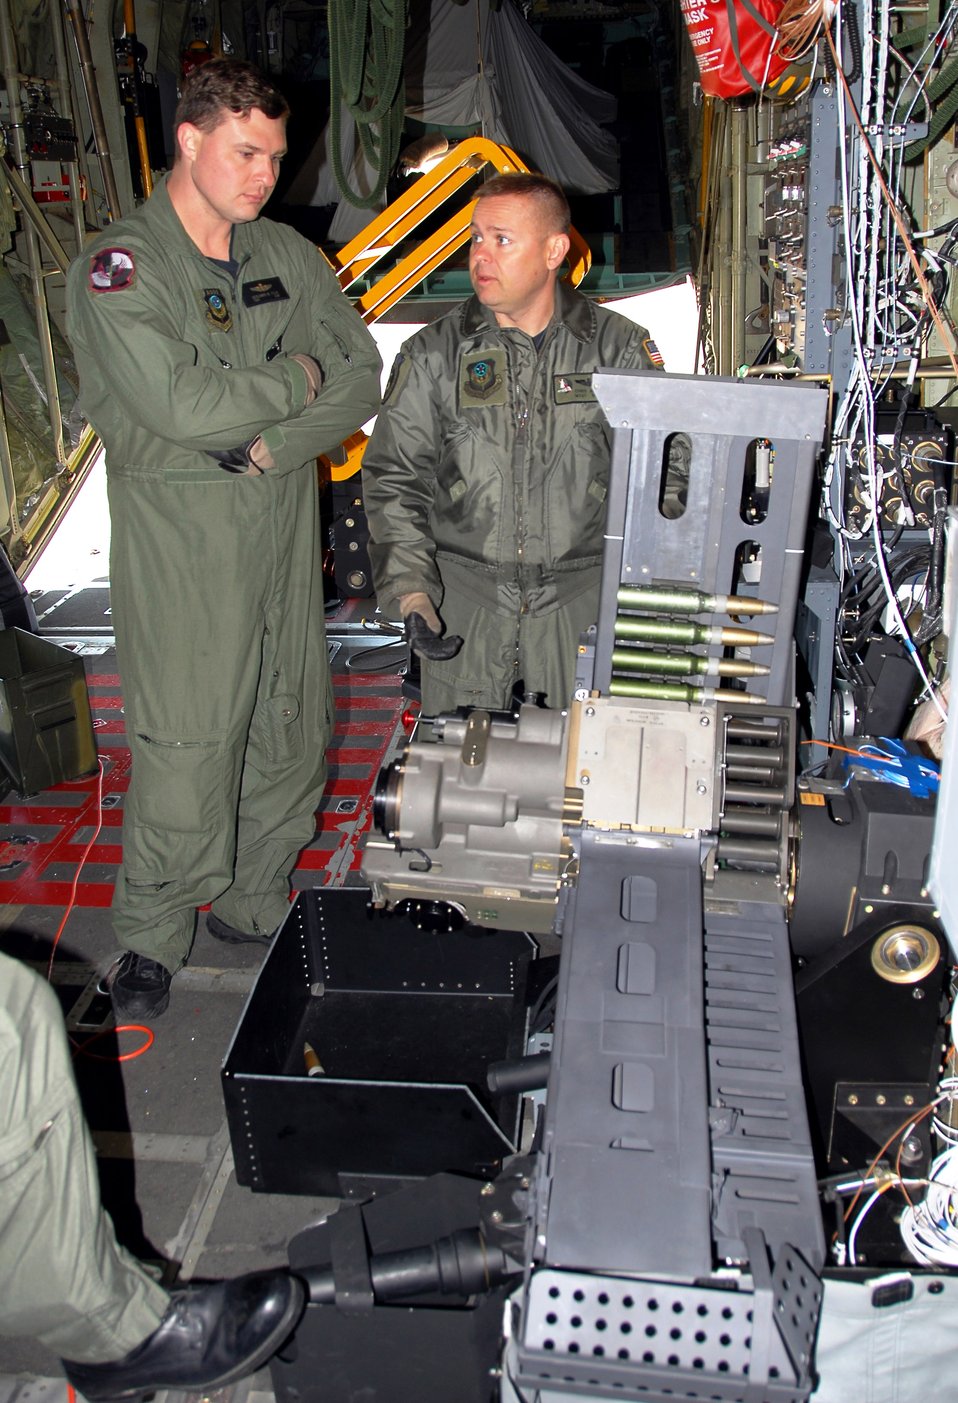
Spooky gunship armed with new cannons

Tech. Sgt. Ben Filek and Master Sgt. Chris Jette look over a newly-installed 30 mm Bushmaster cannon aboard an AC-130U Spooky gunship Jan. 26 at Hurlburt Field, Fla. Sergeant Filek is an aerial gunner with the 19th Special Operations Squadron at Hurlburt Field. Sergeant Jette, also an aerial gunner, is with the 1st Special Operations Group standardization/evaluation section at Hurlburt Field. The 30 mm gun will eventually replace both the 40 mm cannon and 25 mm gun on U-model gunships.